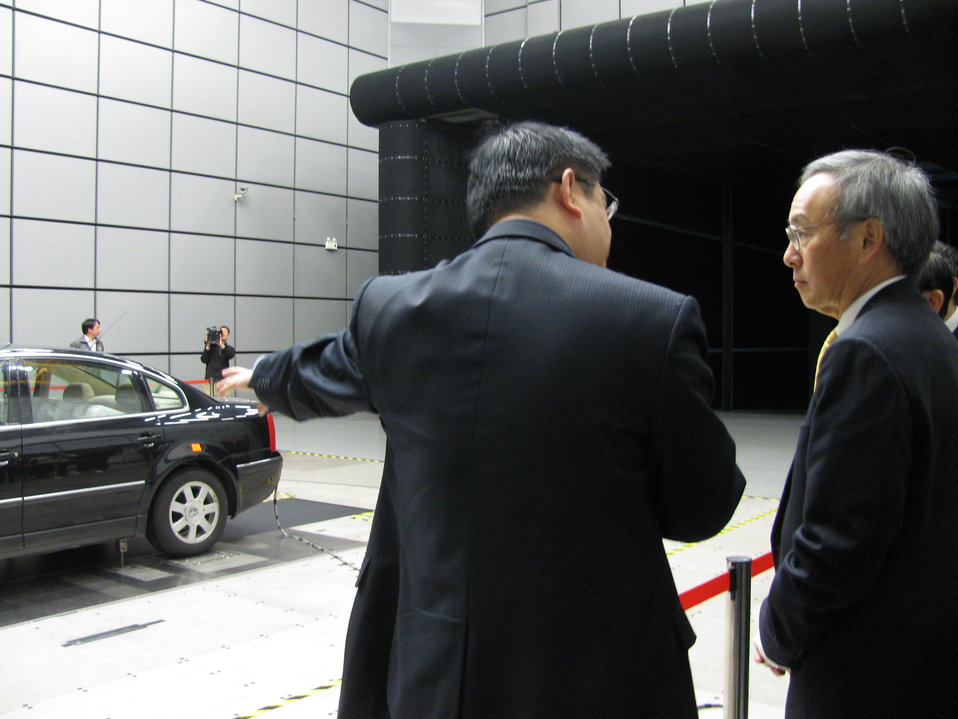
Shanghai 033